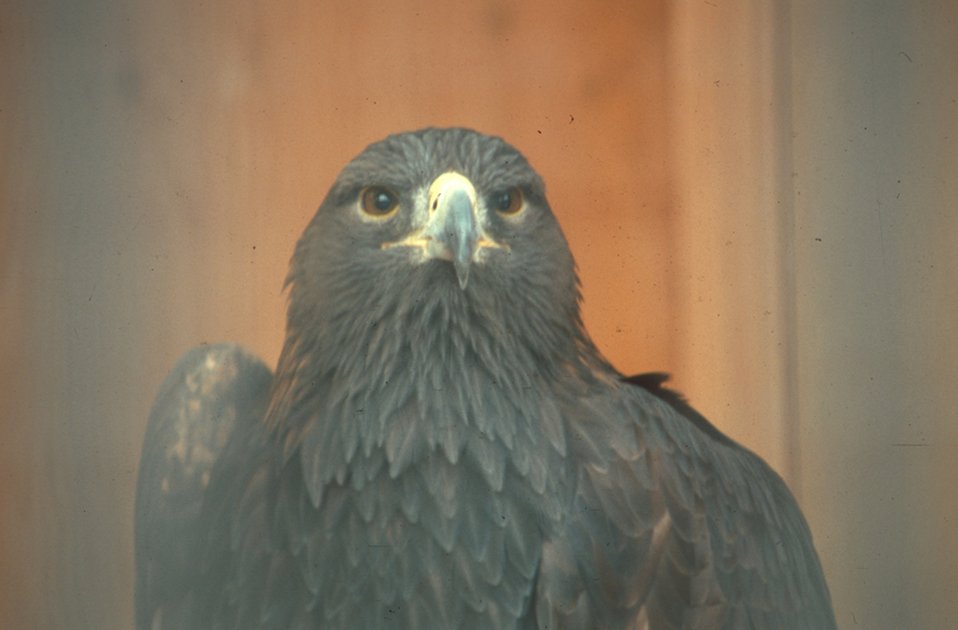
Golden Eagle Owyhee Field Office LSRD Lower Snake River District